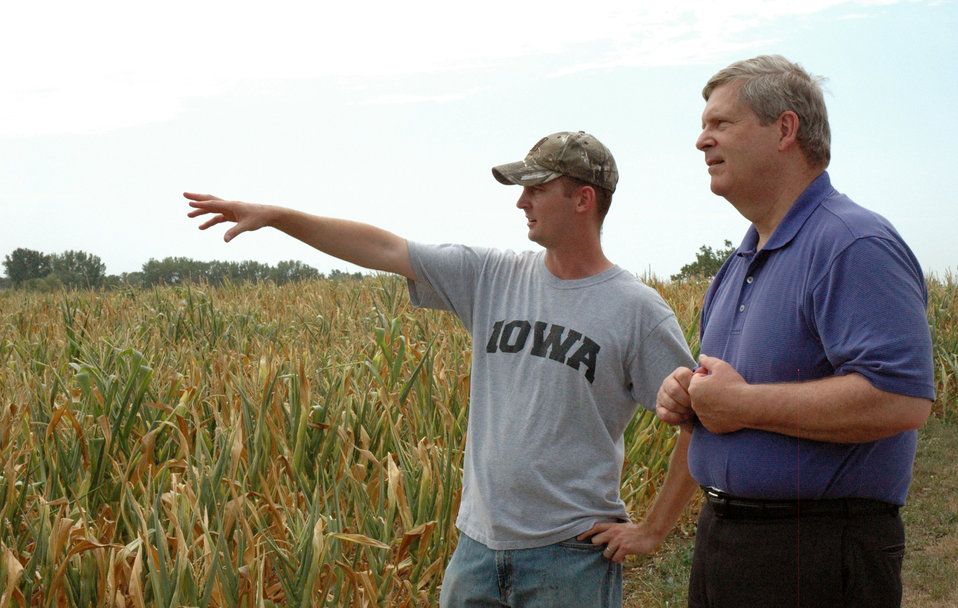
Agriculture Secretary Tom Vilsack tours Eric Cress' farm to examine crop damage caused by the drought near Center Point, IA on Monday, July 23, 2012. Eric and his father Dale said their farm in eastern Iowa is running around seven inches behind normal rain levels for this time of year. On July 20, 2012, the U.S. Drought Monitor reported that 88 percent of the nation’s corn and 87 percent of the soybeans are in drought-stricken areas.